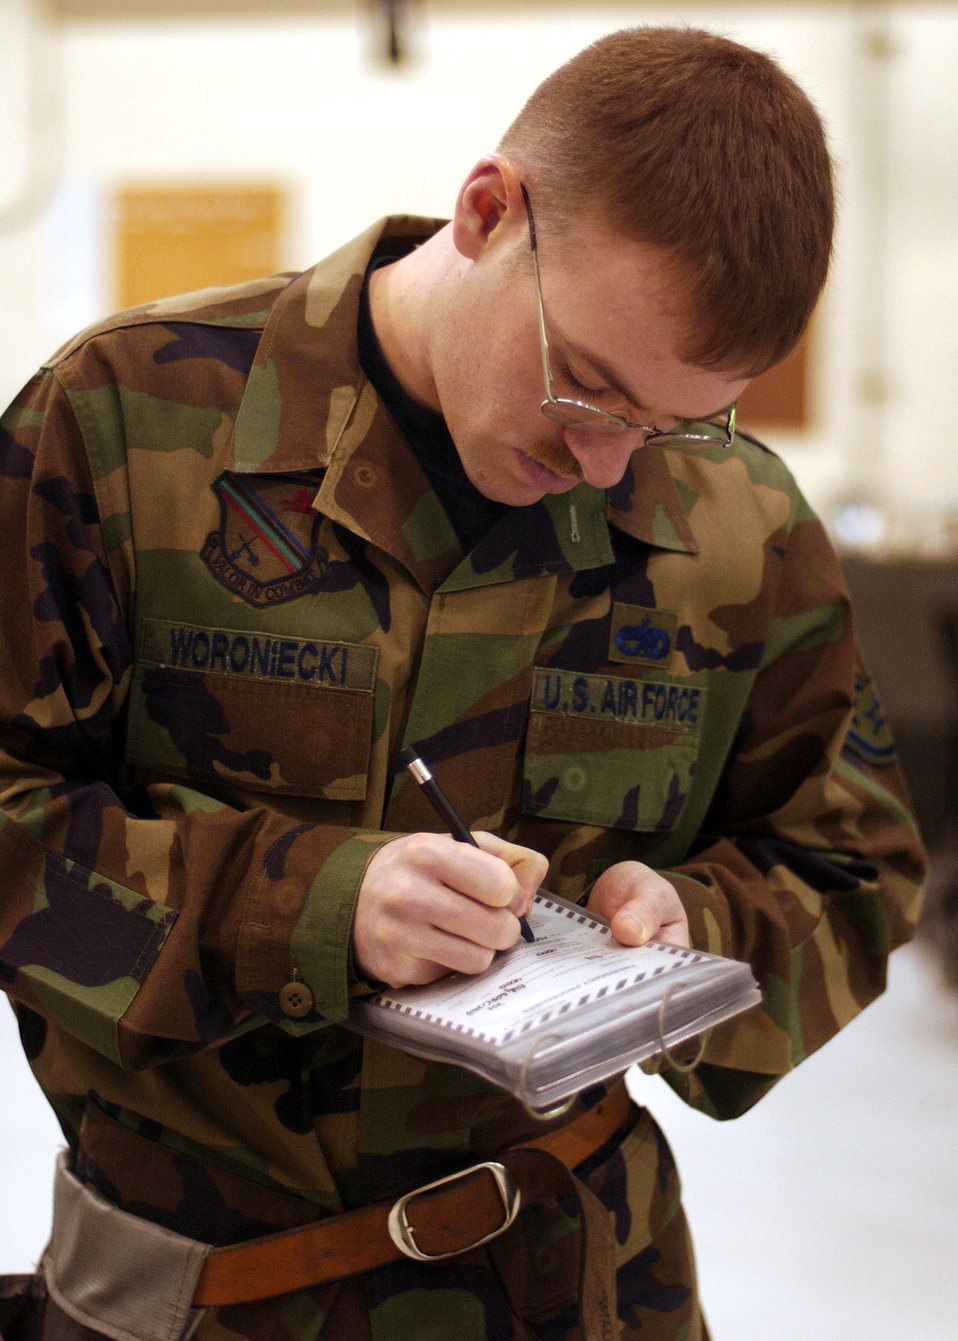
Competing for load crew honors

Staff Sgt. Michael Woroniecki prepares for the start of the Weapons Standardization Load Crew of the Year Competition Jan. 11 at Eielson Air Force Base, Alaska. The competition evaluates technical proficiency, safety procedures and overall time. The 355th Aircraft Maintenance Unit's overall time was 50 minutes and 17 seconds. Sergeant Woroniecki is assigned to the 355th AMU.